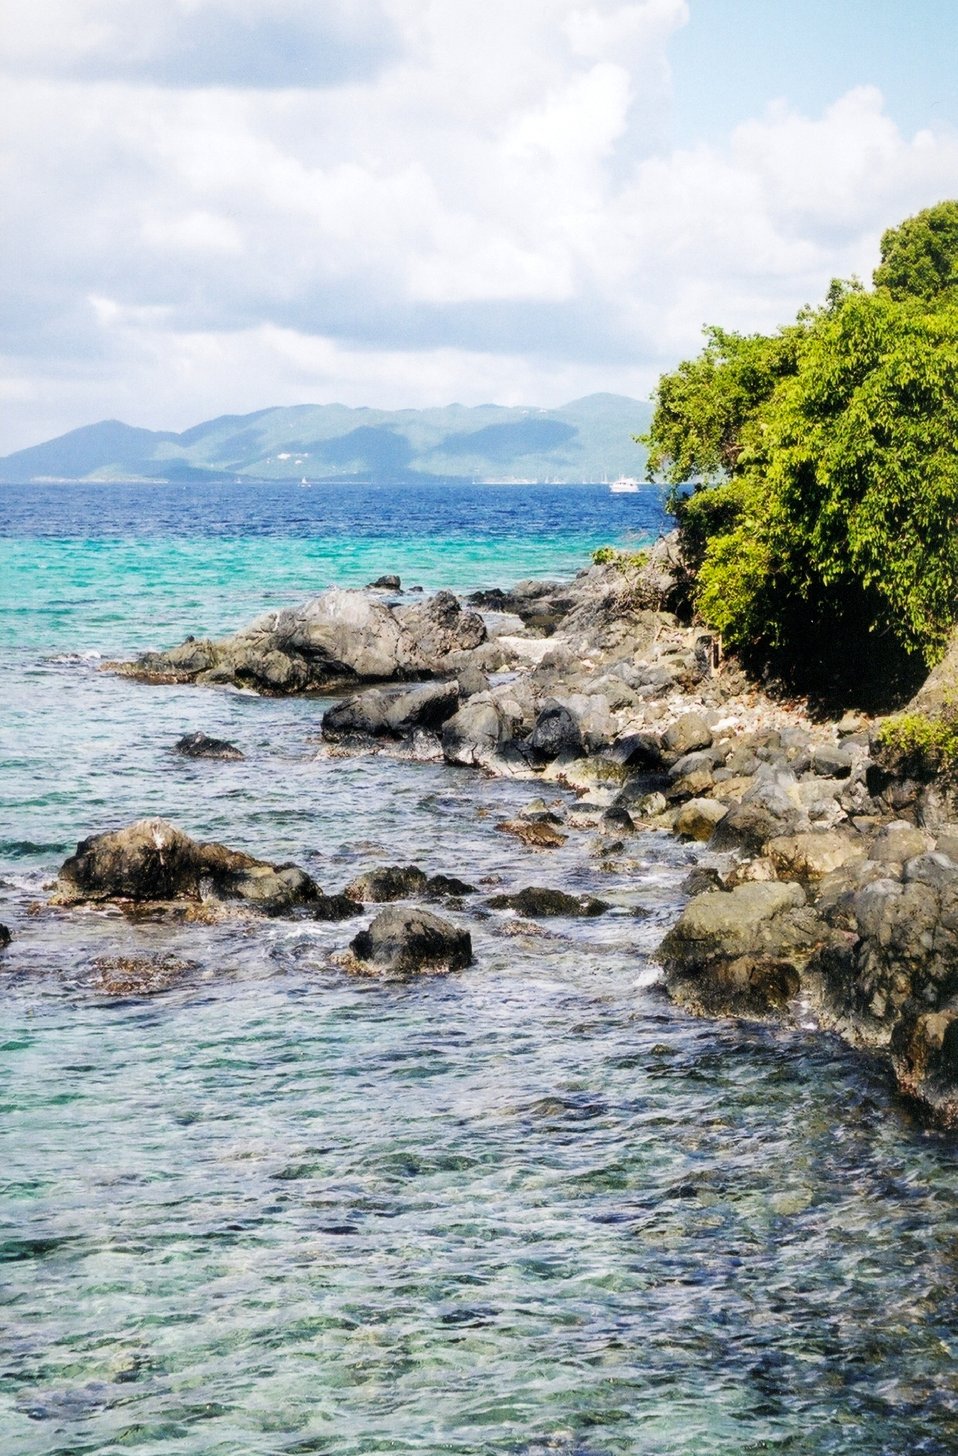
A small island in Pillsbury Sound.